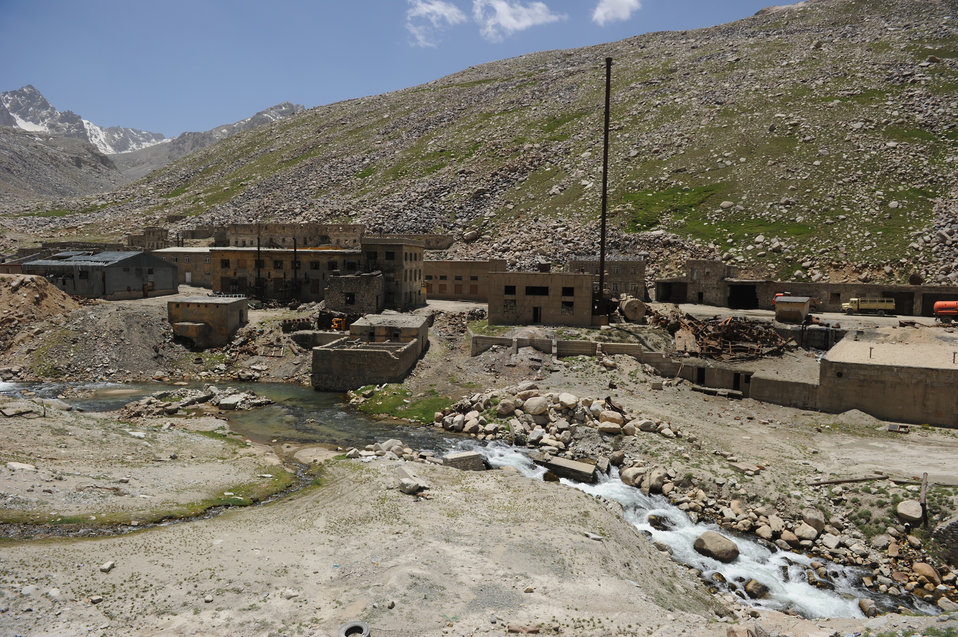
Across the river from the North entrance of the Salang Tunnel on the border of Parwan and Baghlan Provinces, Afghanistan, on Wednesday, June 15, 2011. (S.K.Vemmer/Department of State)